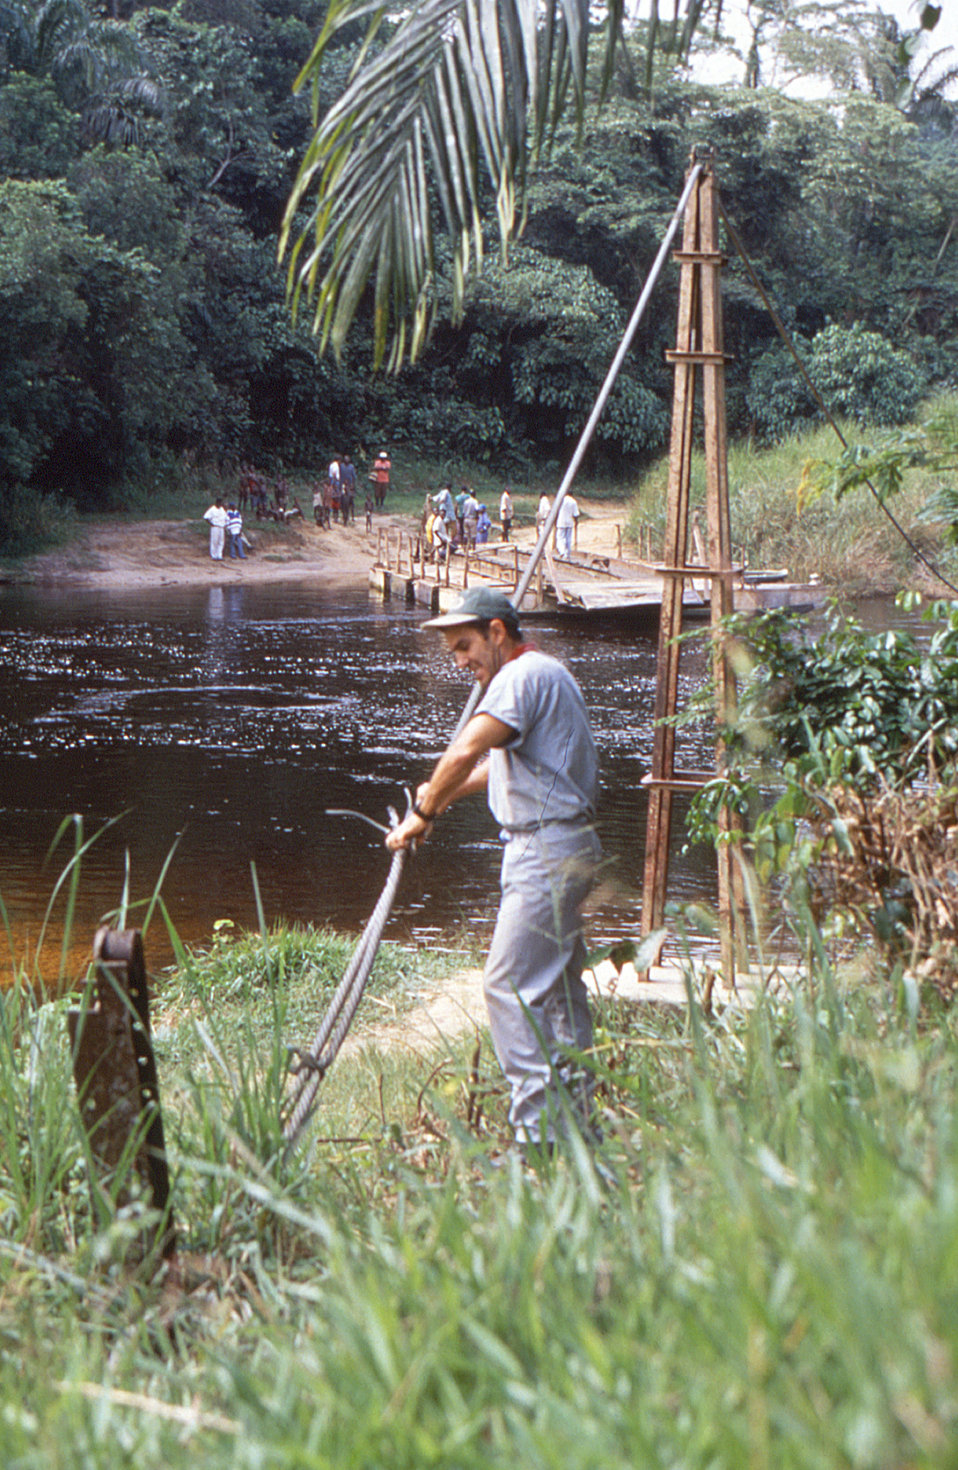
This image was created during an investigation into an outbreak of monkeypox, which took place in the Democratic Republic of the Congo (DRC), 1996 to 1997, formerly Zaire. Depicted here, was R. Joel Williams, D.V.M., as he was using his leatherman hand tool in order to pretend to down the pontoon cable so as to prevent the Zairian military forces (FAZ) from following too closely.